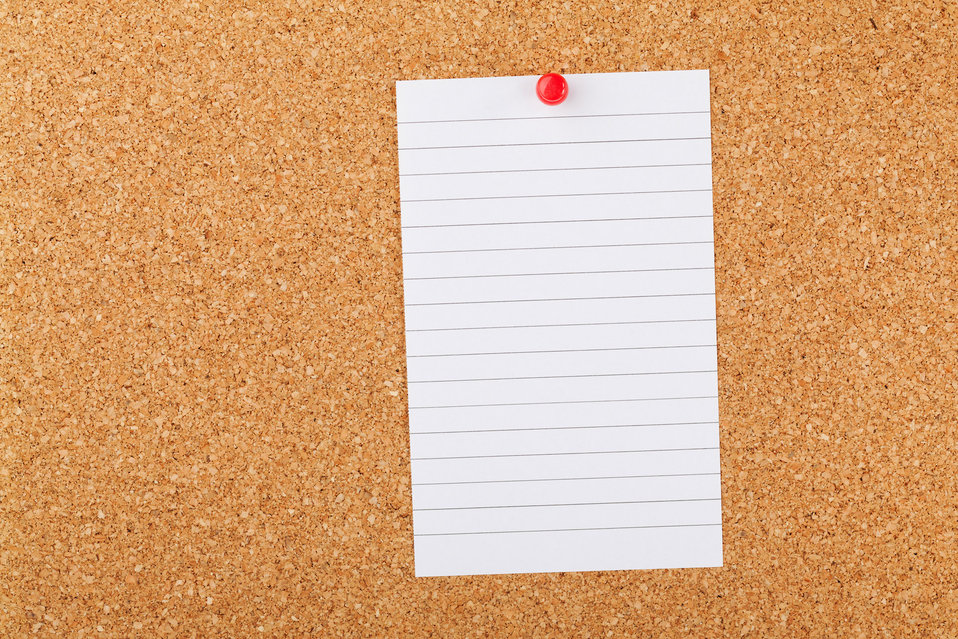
Note paper on cork board

A blank note paper on a cork board.